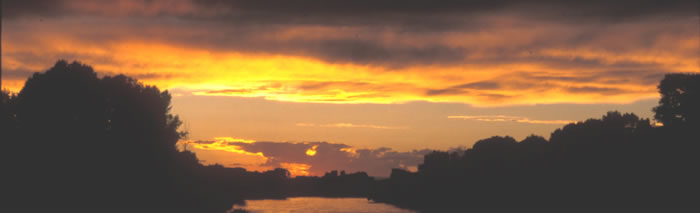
Sunset - Idaho Fish and Wildlife Office